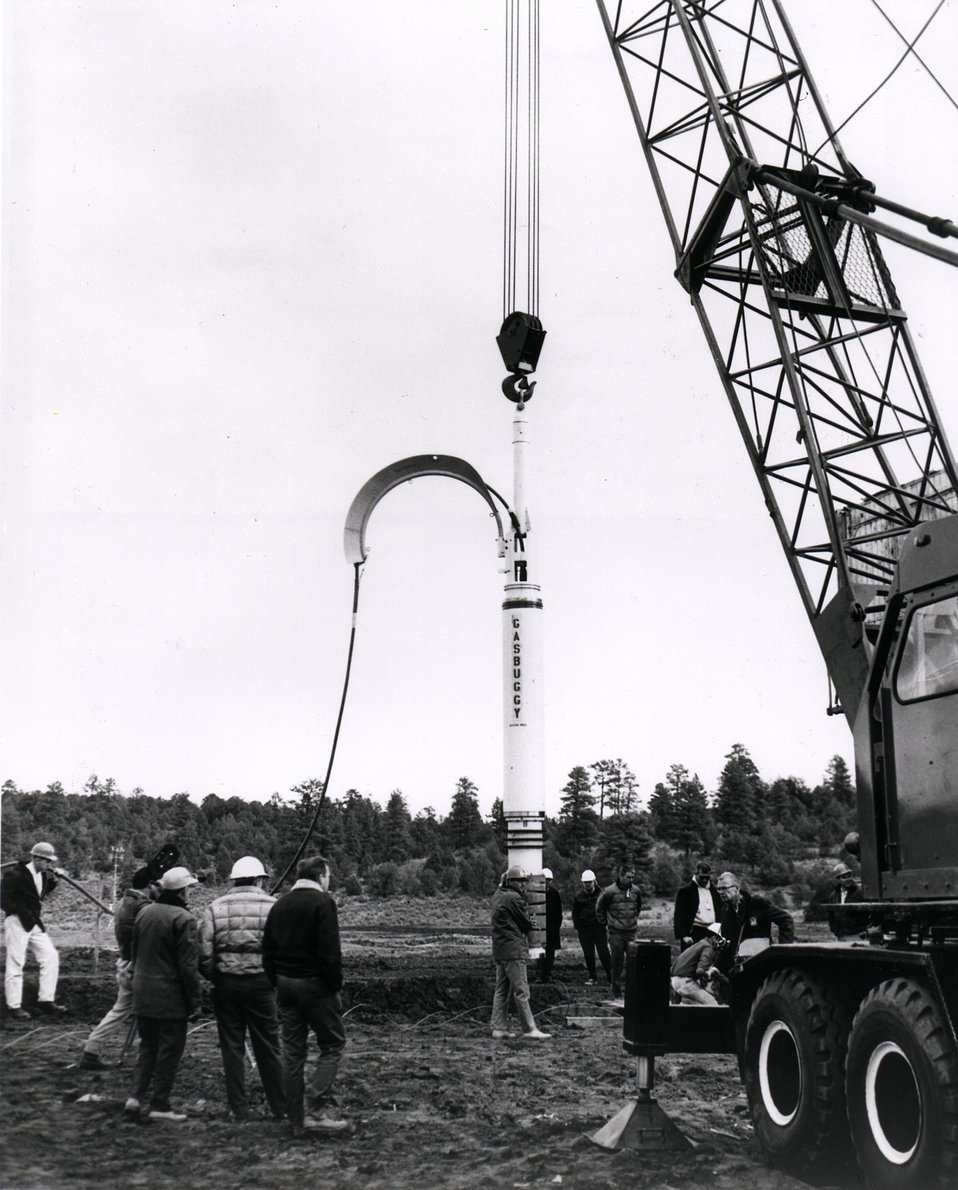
The 13.5-foot by 18-inch canister containing the 26-kiloton nuclear explosive for the Project Gasbuggy natural gas simulation experiment is about to be lowered into the 4,200-foot deep emplacement hole. Circa 1967.